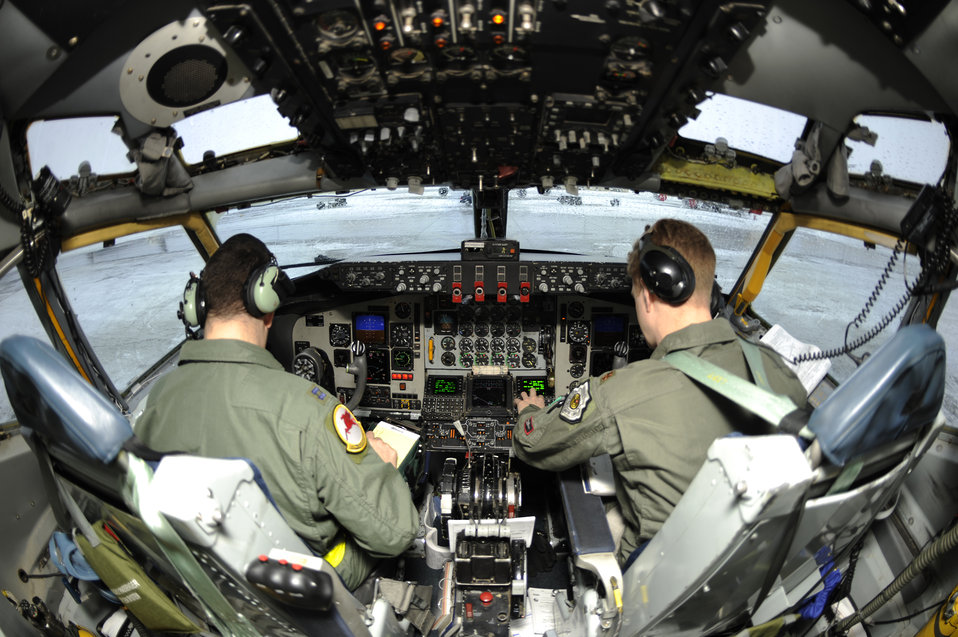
Fairchild AFB officials begin shift in KC-135 ops

Maj. Dan Bradford and Capt. Philippe Melby prepare for takeoff on a KC-135 Stratotanker Jan. 6, 2011, at Fairchild Air Force Base, Wash. Soon, Fairchild AFB pilots will be taking off from the Spokane International Airport, Wash., and the Grant County International Airport in Moses Lake, Wash., as Fairchild AFB officials relocate their KC-135 flying operations. Major Bradford and Captain Melby are 509th Weapons Squadron pilots.